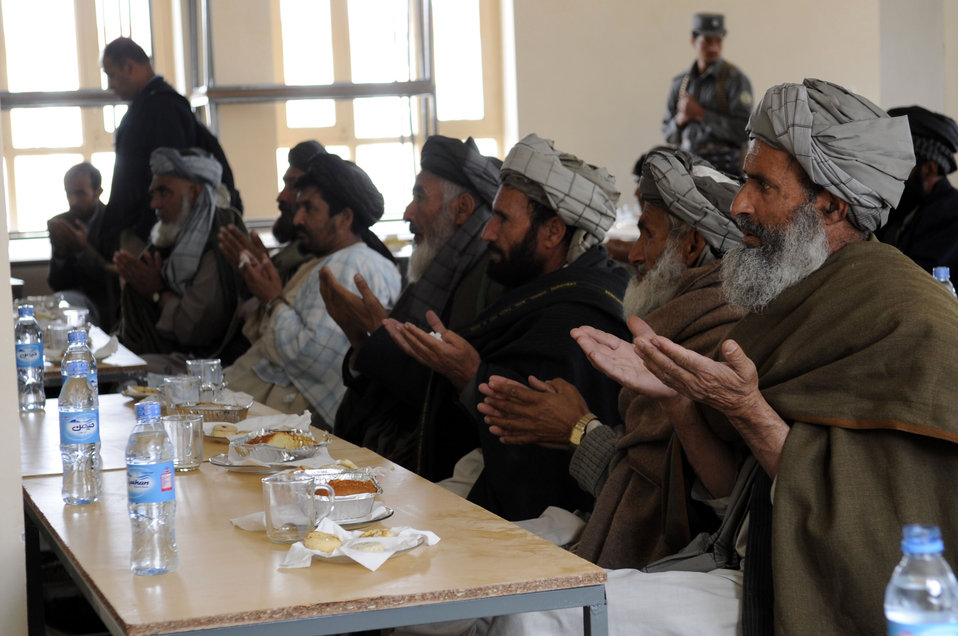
American servicemembers help bring education to Afghan community

Village elders pray during the opening of the Sheik Mati Boy's High School Feb. 25, 2010, in Qalat city of the Zabul Province in Afghanistan.